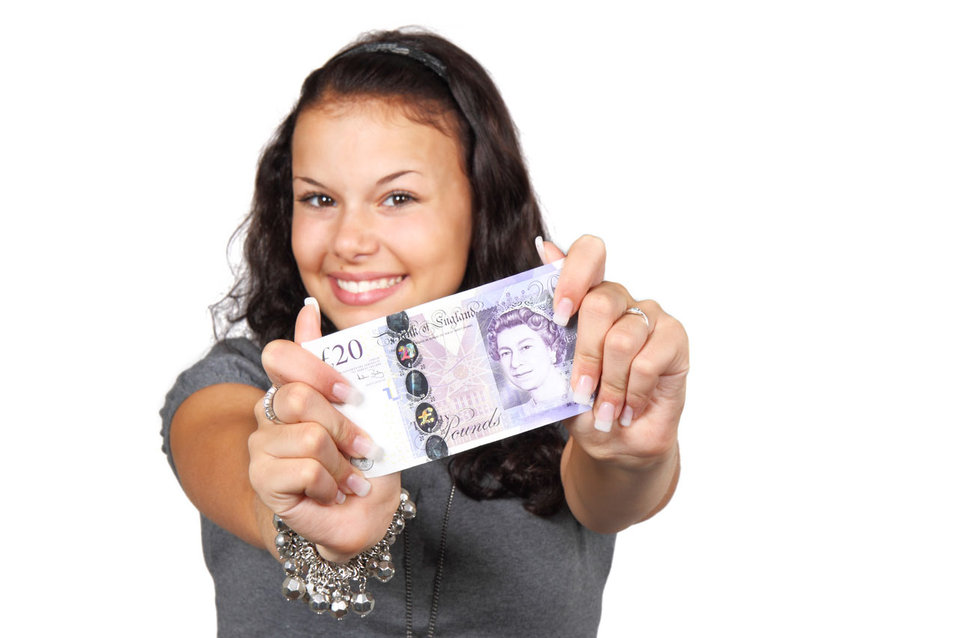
Twenty pounds

Wow, twenty pounds sterling.